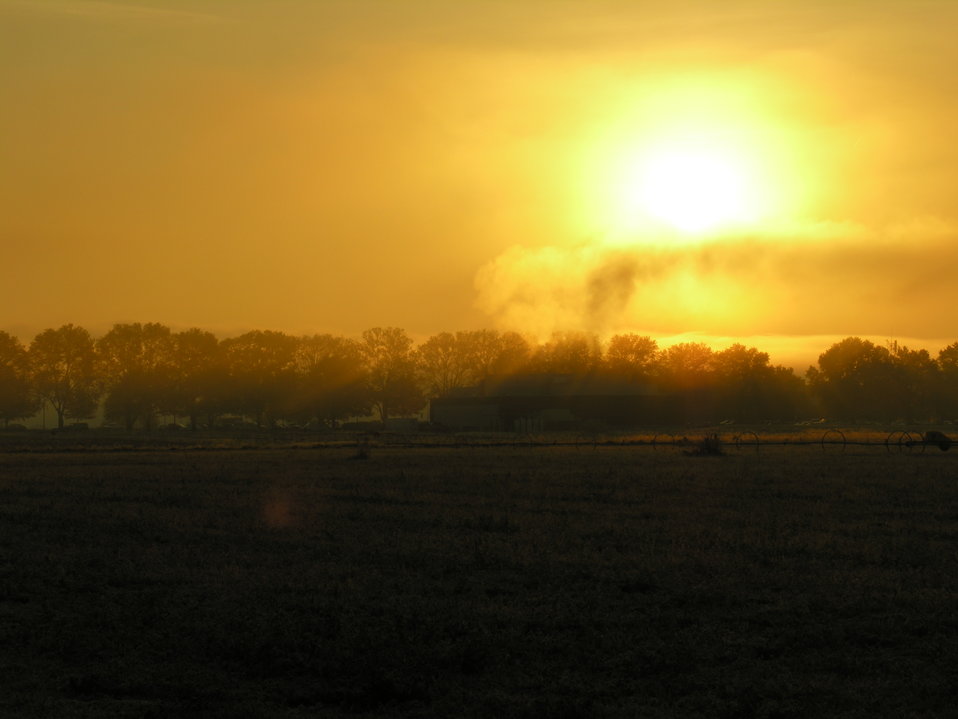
Richland, where the main campus of Pacific Northwest National Laboratory, enjoys 300 days of sunshine a year.